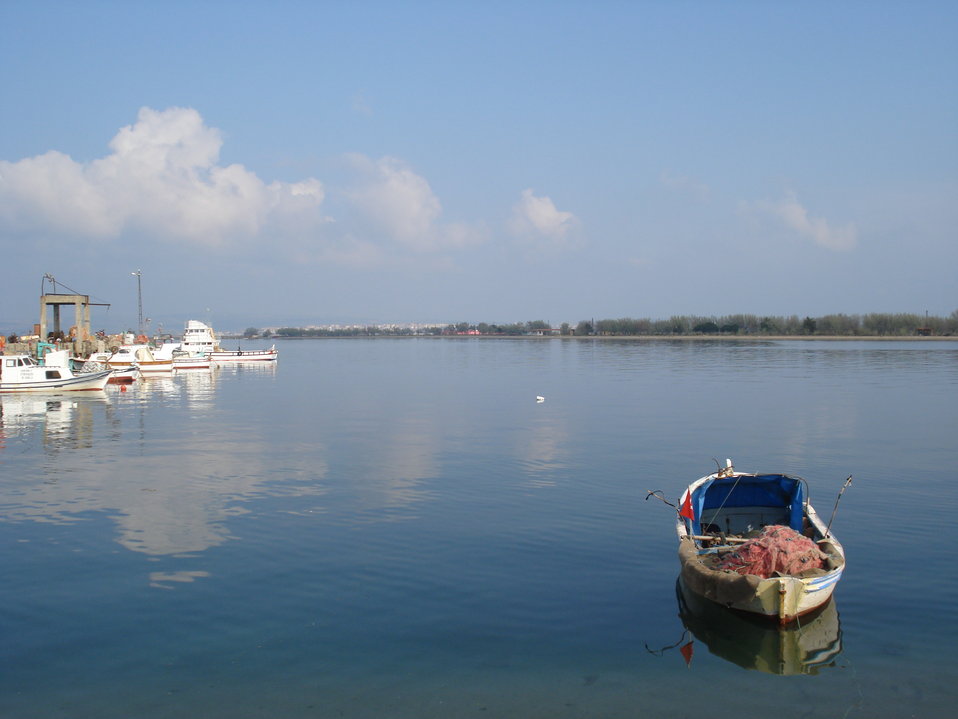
A rowboat on the Dardanelles. Türkçe: Çanakkale Boğazı'ndaki bir sandal.